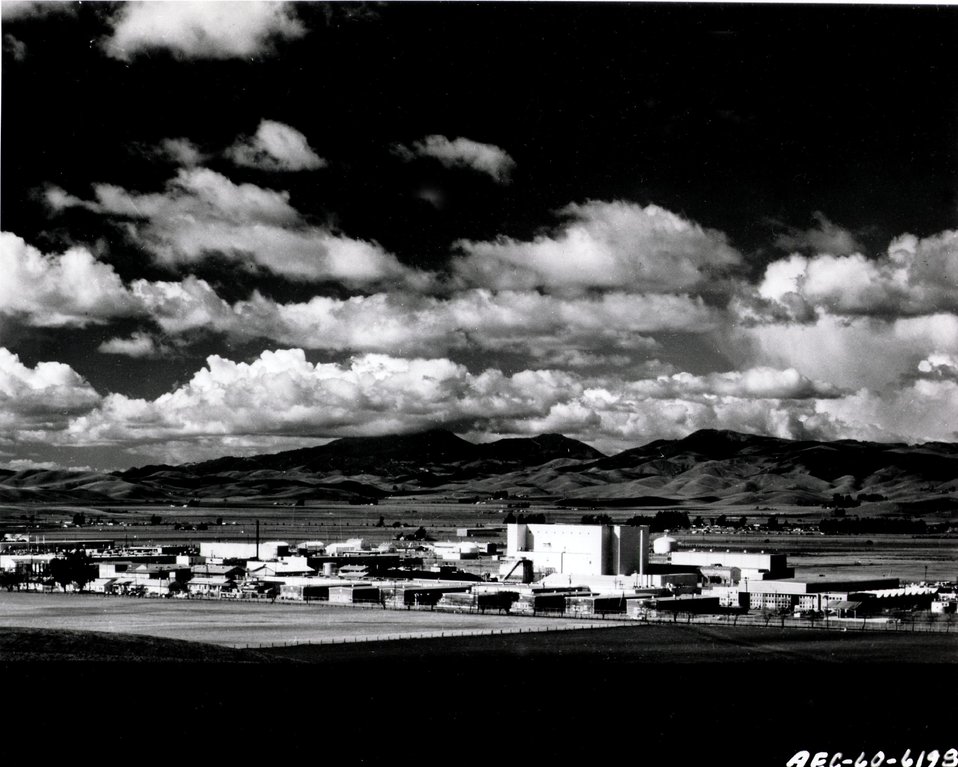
Ground view of the E.O. Lawrence Radiation Laboratory, Livermore, California. Circa 1960.